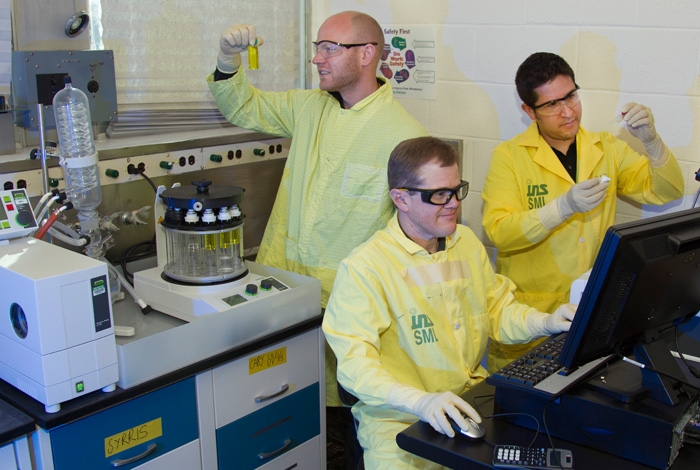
LOS ALAMOS SCIENTISTS EXAMINE THE BUCHI MULTIVAPOR P-12 EVAPORATOR, AND AGILENT TECHNOLOGIES CARY 60 UV-VIS SPECTROMETER.